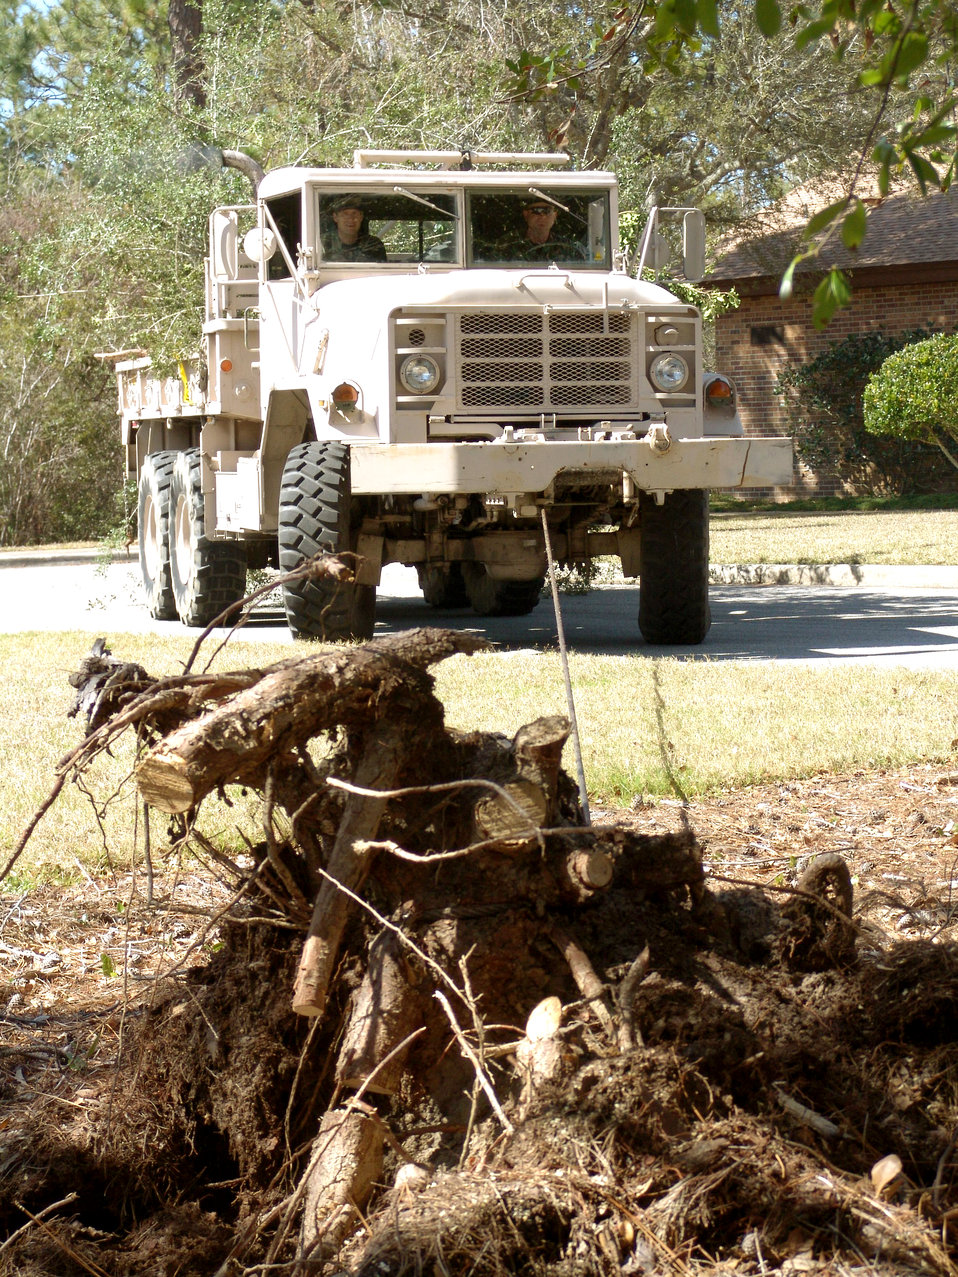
Eglin Airmen go to war with stumps, trees

SHALIMAR, Fla. -- Airmen of the 96th Ground Combat Training Squadron used a five-ton truck to pull out stumps from Bob Hope Village here. The unit used their own equipment to remove 18 stumps and haul tree limbs, saving the village more than $2,000. Hurricane Ivan downed hundreds of trees on the property and caused more than $300,000 in damage.